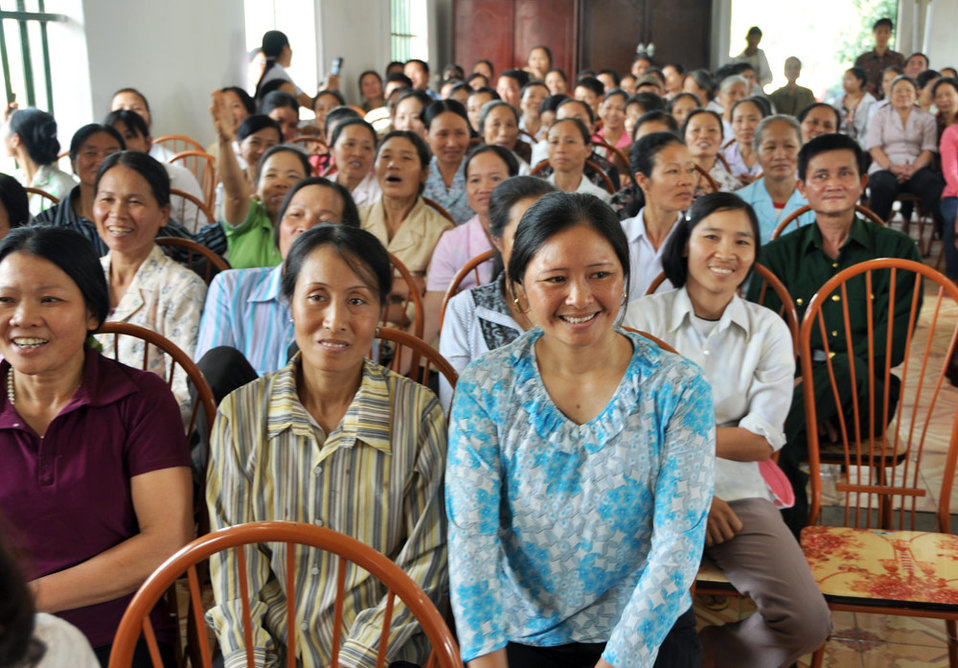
Residents in Vietnam's Tien Ngoai Commune, Duy Tien District, Ha Nam Province, discuss ways to prevent and control avian and pandemic influenza.